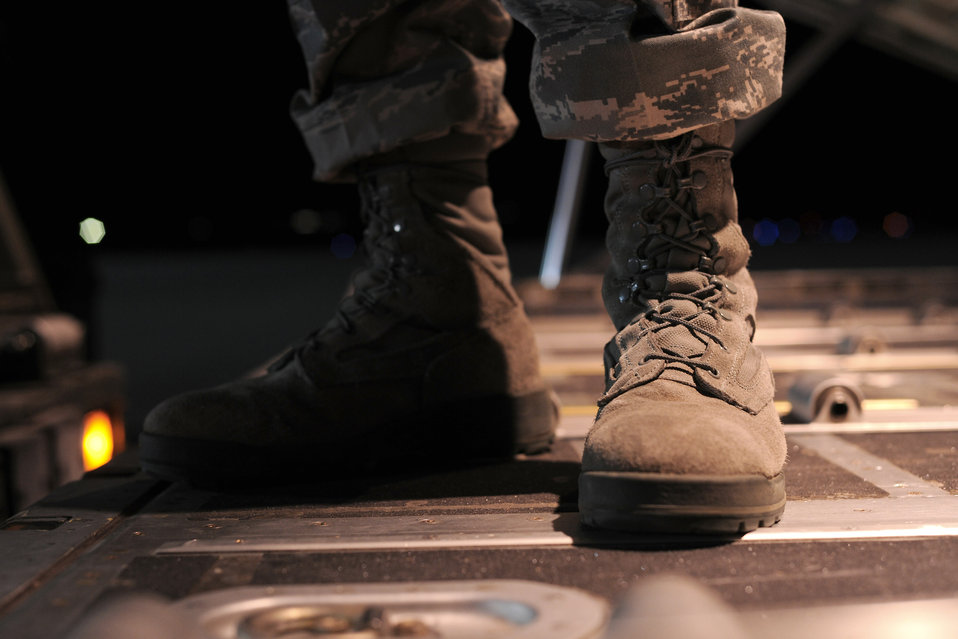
Operation Odyssey Dawn

SPANGDAHLEM AIR BASE, Germany ? An Airman stands inside a C-130J Super Hercules here before loading cargo in support of Operation Odyssey Dawn March 20. Joint Task Force Odyssey Dawn is the U.S. Africa Command task force established to provide operational and tactical command and control of U.S. military forces supporting the international response to the unrest in Libya and enforcement of United Nations Security Council Resolution (UNSCR) 1973. UNSCR 1973 authorizes all necessary measures to protect civilians in Libya under threat of attack by Qadhafi regime forces. JTF Odyssey Dawn is commanded by U.S. Navy Admiral Samuel J. Locklear, III.